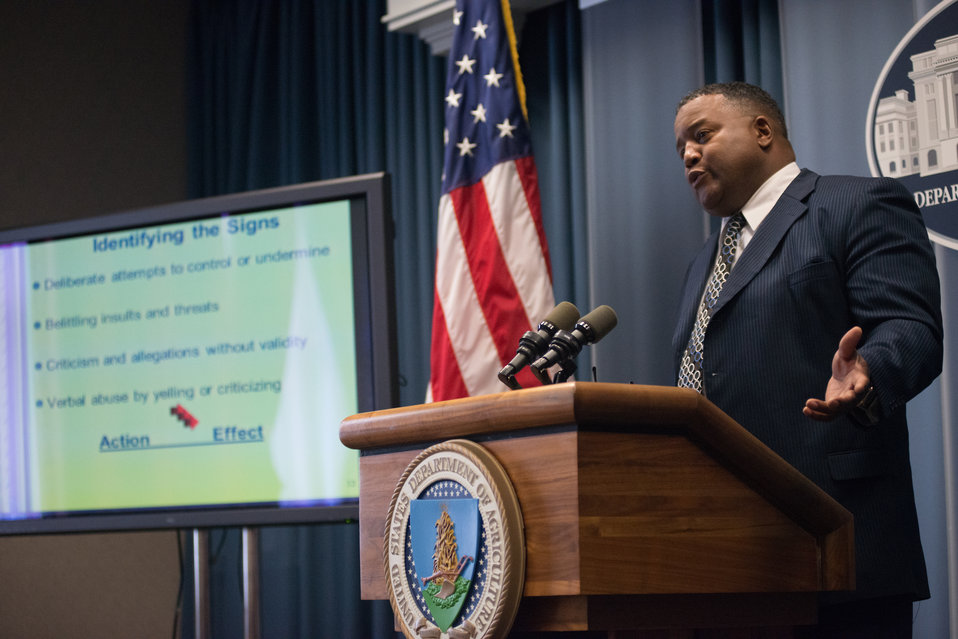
Bureau of Engraving and Printing Alternative Dispute Resolution Steering Committee member and mediator Leonardo Rowe leads the forum on Workplace Bullying during the U.S. Department of Agriculture (USDA) Rural Development’s (RD) 2nd Annual Cultural Transformation kickoff opening ceremony and forums, themed “Employees Influencing Change,” on Tuesday, Aug. 13, 2013 at USDA in Washington, D.C.